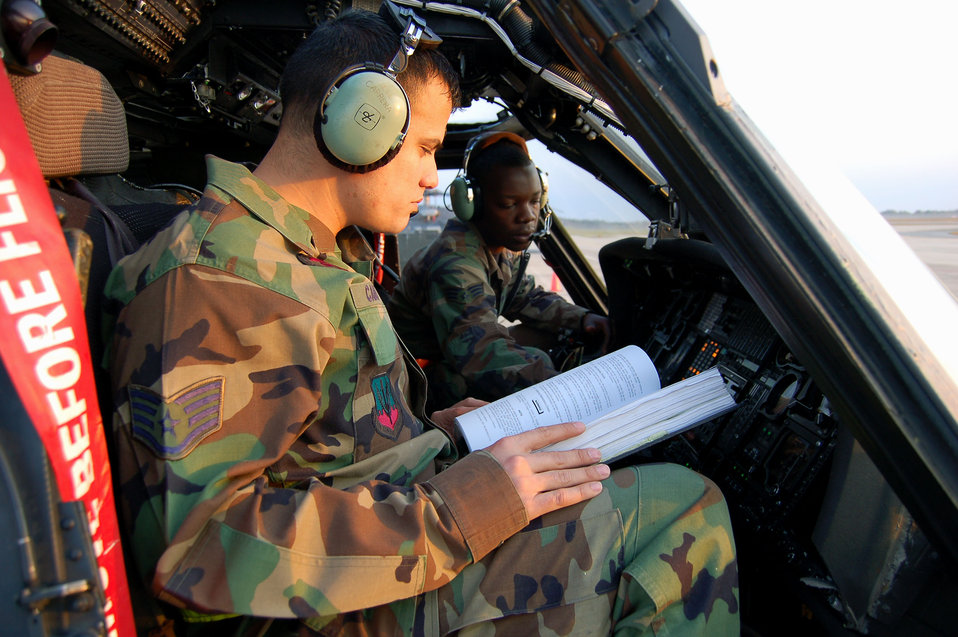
'Abort Court' gets to bottom of mission scrubs

Staff Sgt. David Cabrena and Senior Airman Berry Lynch perform a functional check March 12 on the Moody Air Force Base, Ga., flightline. The Airmen are 723rd Aircraft Maintenance Squadron instrument and flight control systems specialists.